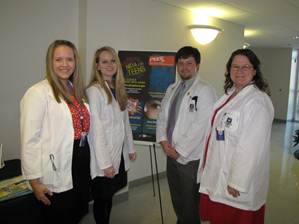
Auburn University pharmacy students

Drug Education Council’s NDFW summit, Thursday, January 31, 2013 in Mobile, Alabama. State and local officials held a prescription drug abuse summit to heighten awareness.